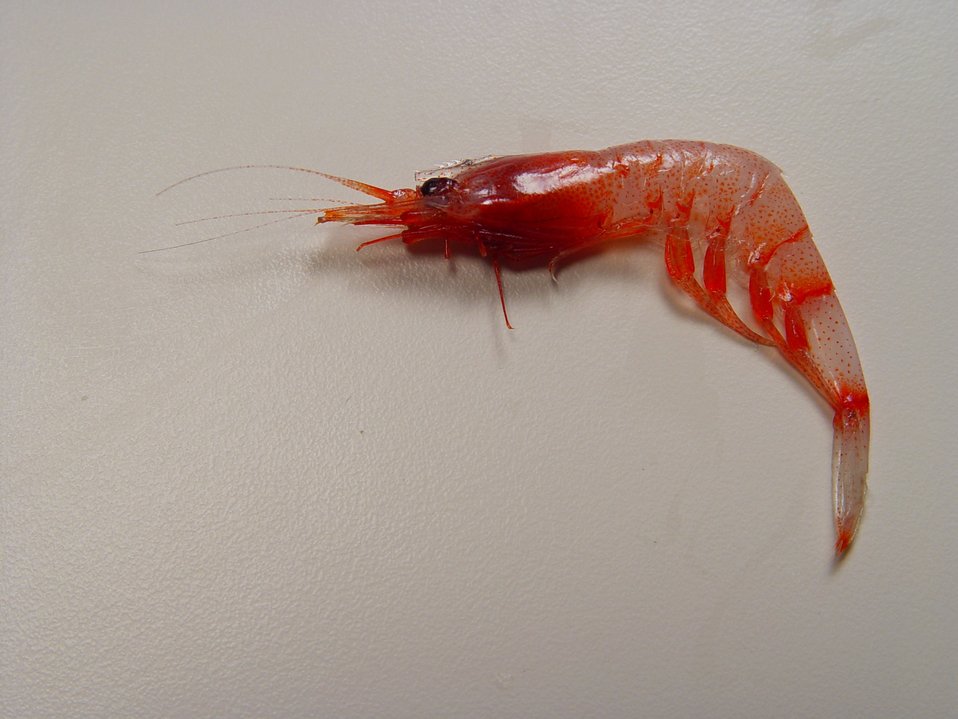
A type of prawn/shrimp , family Sergestidae . Genus and species unknown.